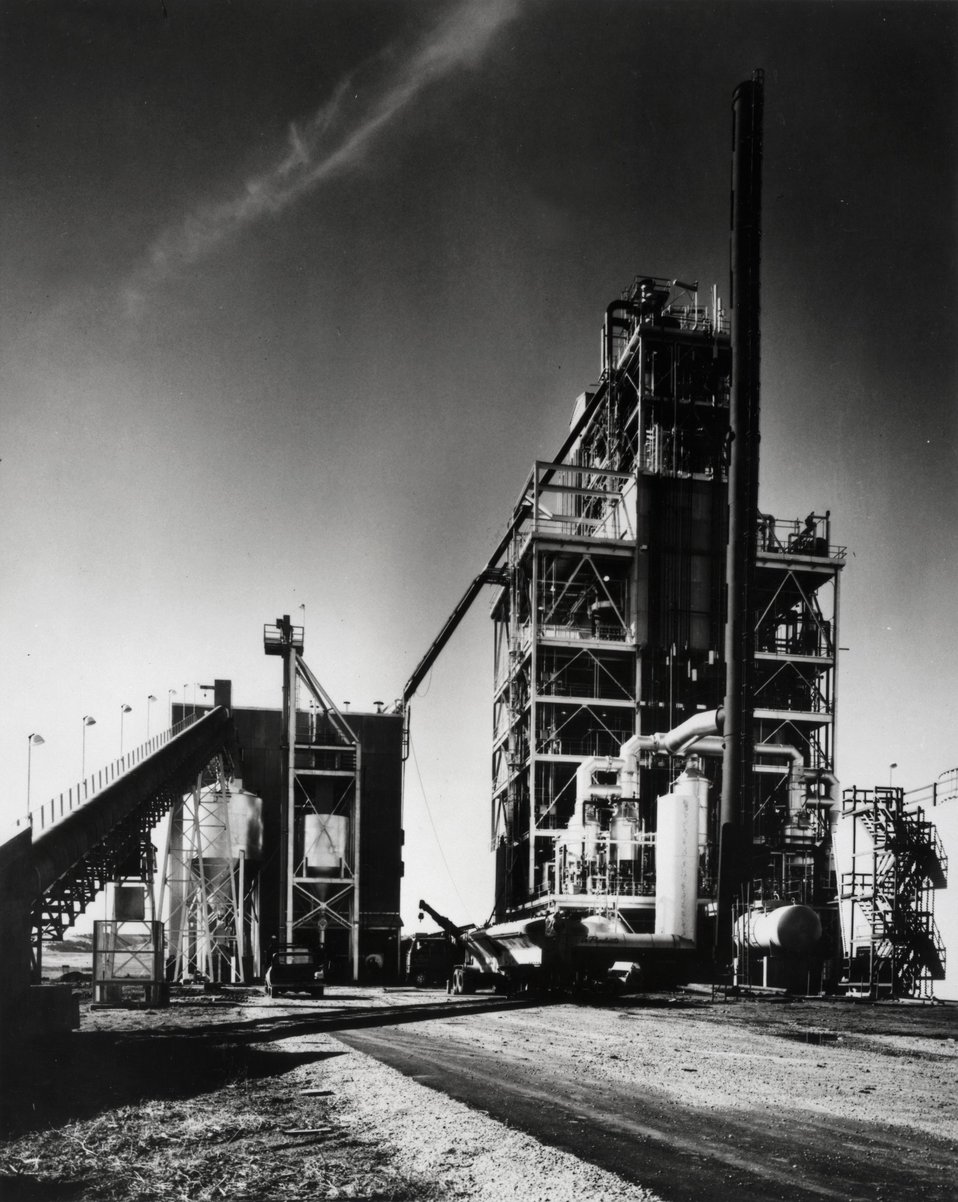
This $9.3 million pilot plant at Rapid City, S.D. tests Consolidated Coal Co.'s process for converting lignite to pipeline quality gas.